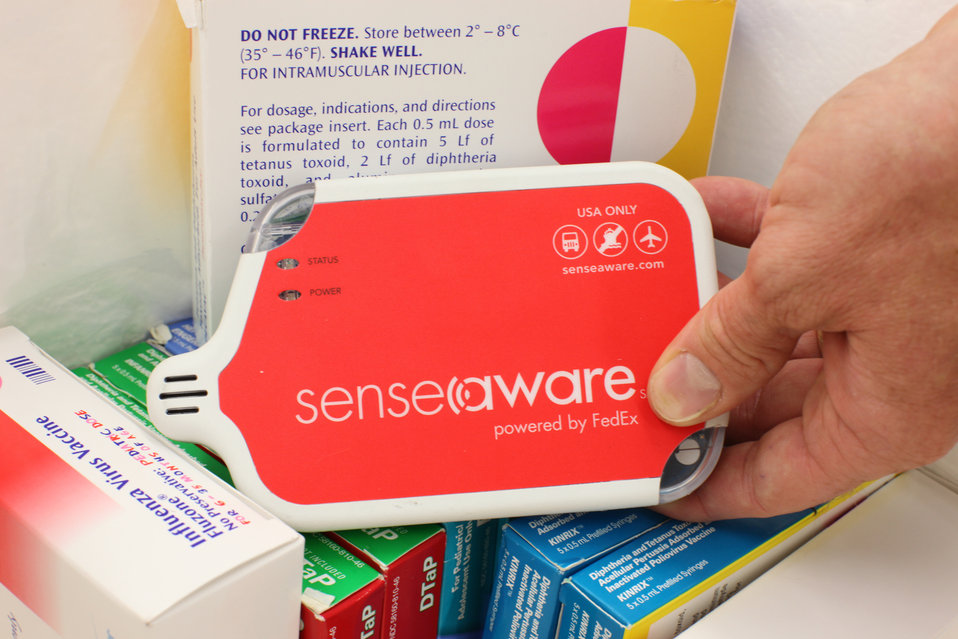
Sensaware

Developed by international shipper FedEx and tested with help from NIST, the Senseaware device connects to cell phone networks to provide users with near real-time information on a packages precise location, temperature, humidity, pressure, acceleration, elevation and exposure to light. NIST researchers plan to deploy the technology as part of a pilot project to monitor and improve climate measurements.